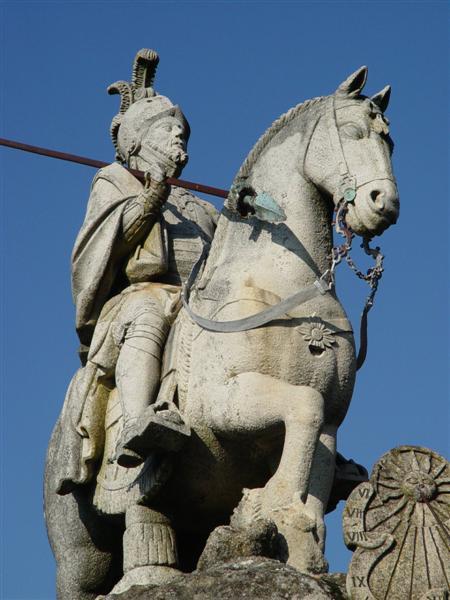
Estatua de S. Longuinhos no Bom Jesus, Braga Foto de Jose Goncalves